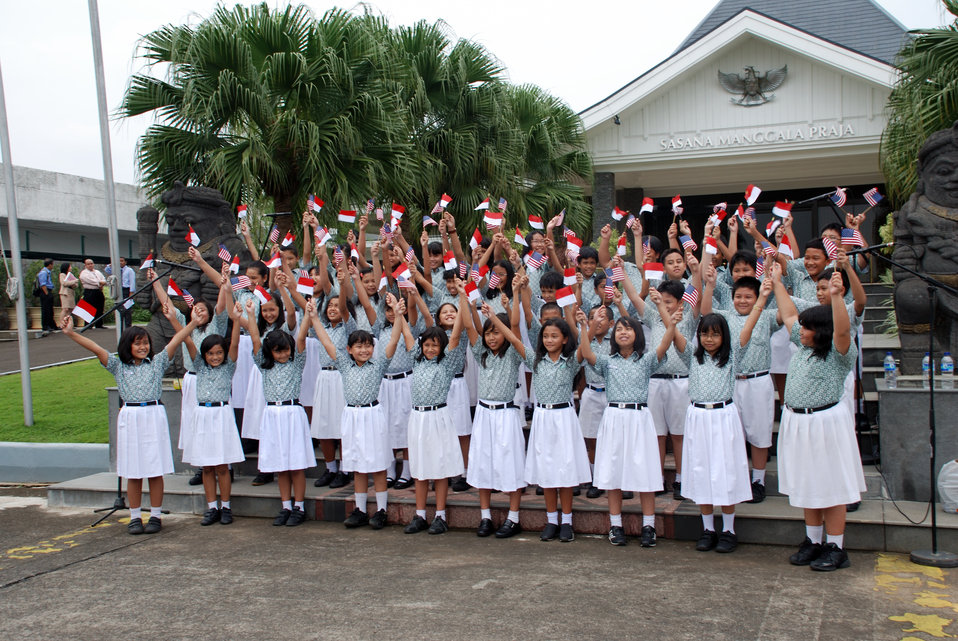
Behind the Scenes: Indonesian Students Prepare for Secretary Clinton's Arrival

Menteng Elementary School No. 1 Student Choir get in place at Halim
Airport minutes before Secretary Clinton's arrival in Jarkarta, Indonesia during the visit of U.S. Secretary of State Hillary Rodham Clinton February 18, 2009.